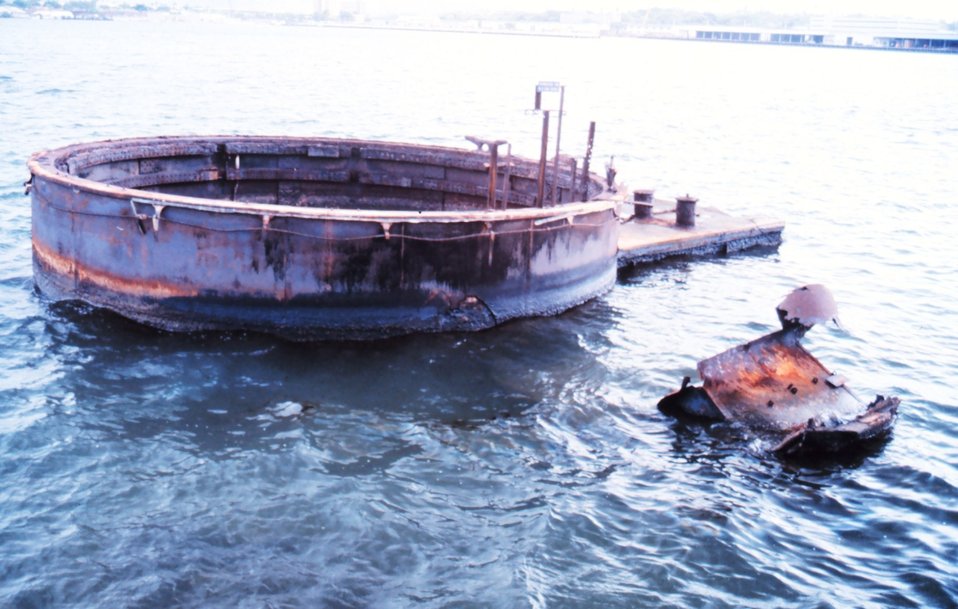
Battleship ARIZONA gun turret at the ARIZONA Memorial